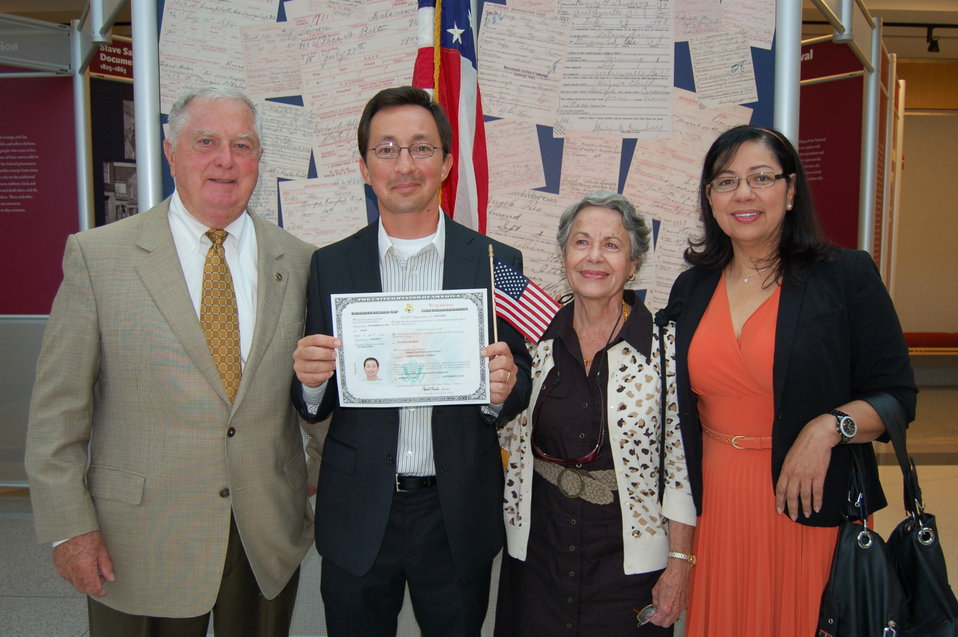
New Citizens